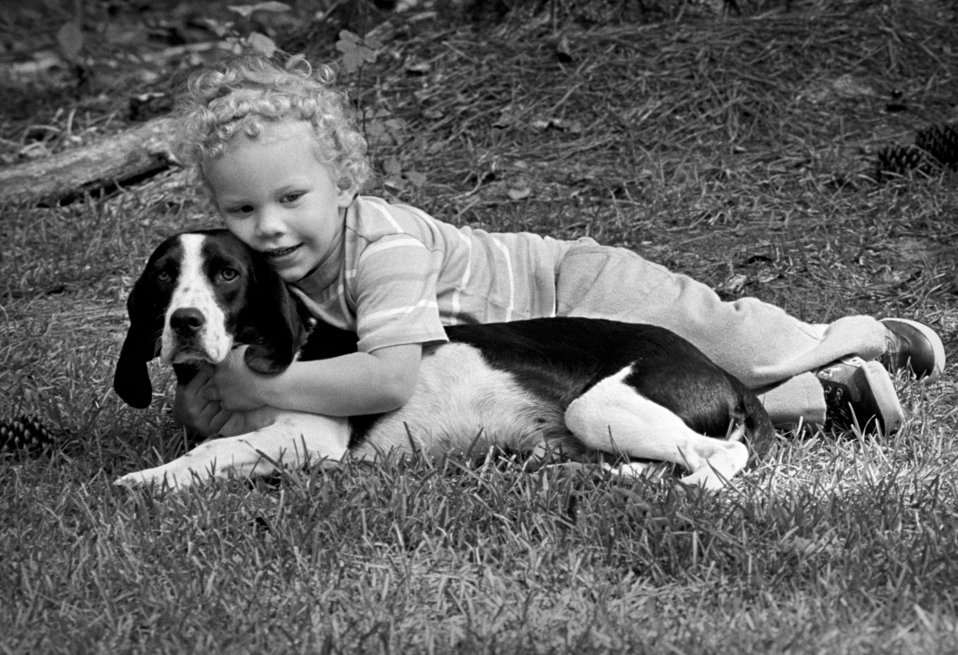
This photograph depicts a beagle dog named Barney that was enjoying the hugs of a small child while both were lying on the lawn. Note the docile, relaxed disposition of this pet, which is ideal when thinking about adding a canine family member, especially when small children are involved.The CDC advises that you consider the following before you decide to own a dog: